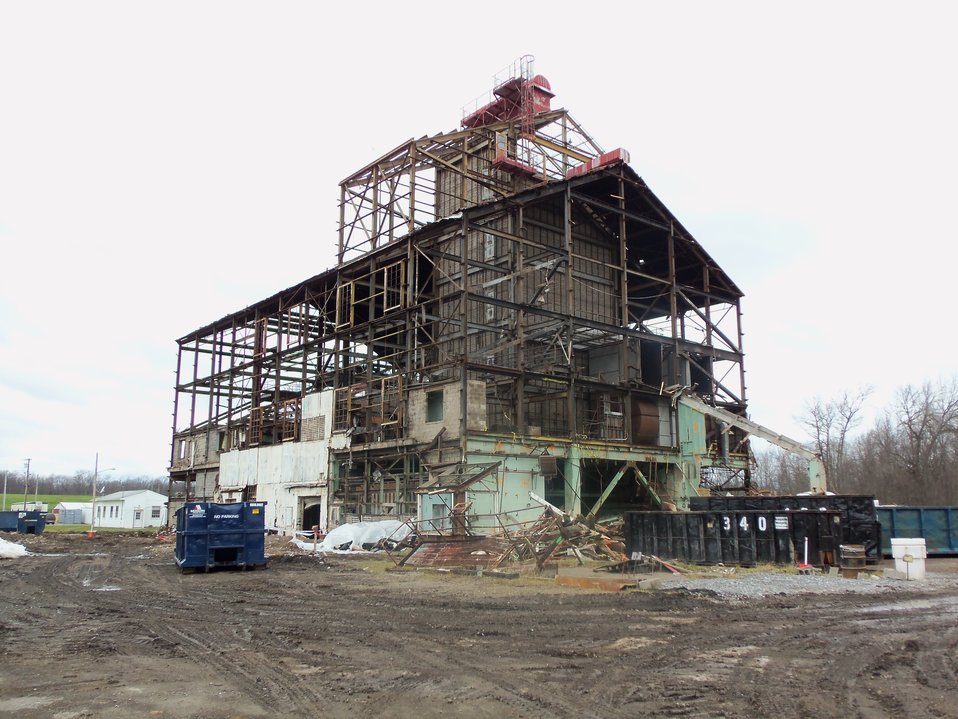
BLDG 401 SHELL

Activities from the Niagara Falls Storage Site, which is associated with the former Lake Ontario Ordnance Works. Formerly Utilized Sites Remedial Action Program (FUSRAP), a program initiated in 1974 to identify, investigate and clean up or control sites that were part of the Nation's early atomic energy and weapons program. Activities at the sites that are eligible for FUSRAP were conducted by Manhattan Engineer District (MED) or the Atomic Energy Commission (AEC), both predecessors of the Department of Energy (DOE). The U.S. Army Corps of Engineers was assigned management of FUSRAP by Congress in 1997.